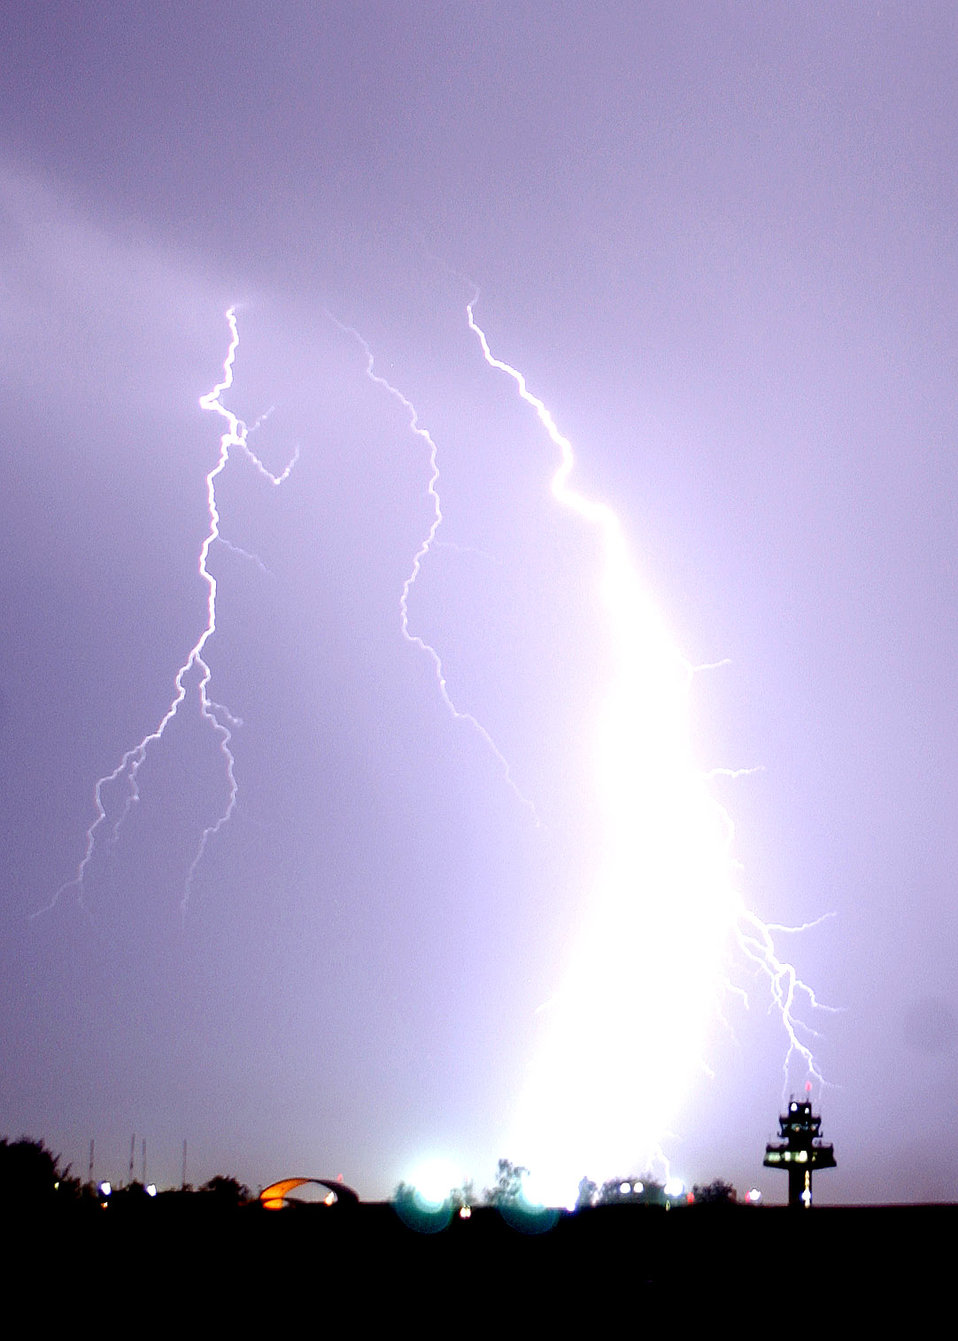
Nature's fireworks

Lightning strikes near the control tower and a taxing C-130 Hercules at Balad Air Base, Iraq, on Tuesday, May 16, 2006. Balad handles more than 750 cargo flights each month and is the Department of Defense's busiest single runway. Using C-130s to fly in-theater airlift missions has reduced the number of ground convoys and troops exposed to roadside bomb attacks.